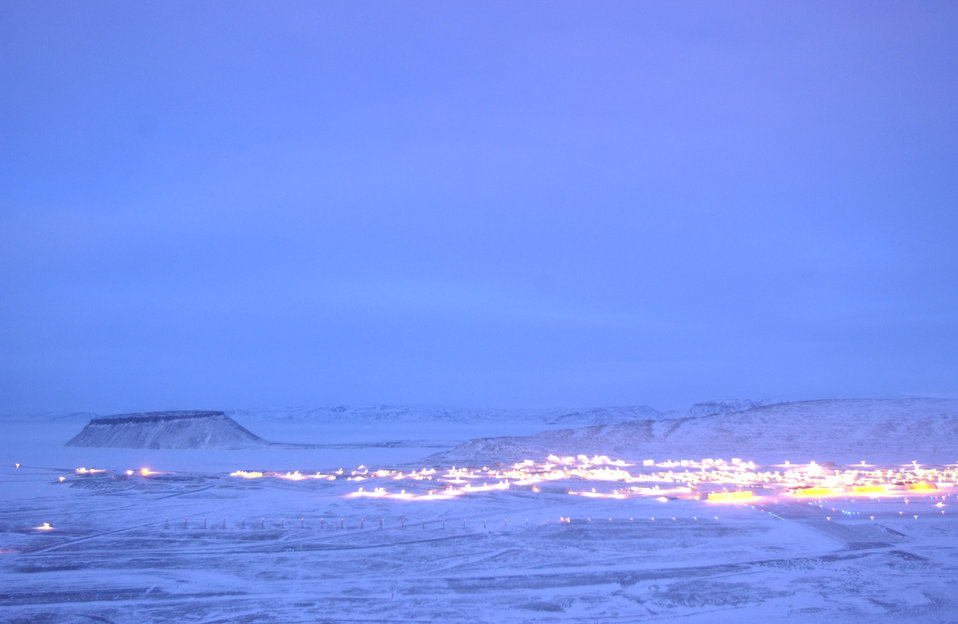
Life at Thule

From South Mountain, Thule Air Base and Mount Dundas are captured during a short period of January twilight using time-lapsed photography to show the minimal amount of available light Jan. 25 in Greenland. Airmen serve a one-year remote, unaccompanied tour here in a multinational environment.